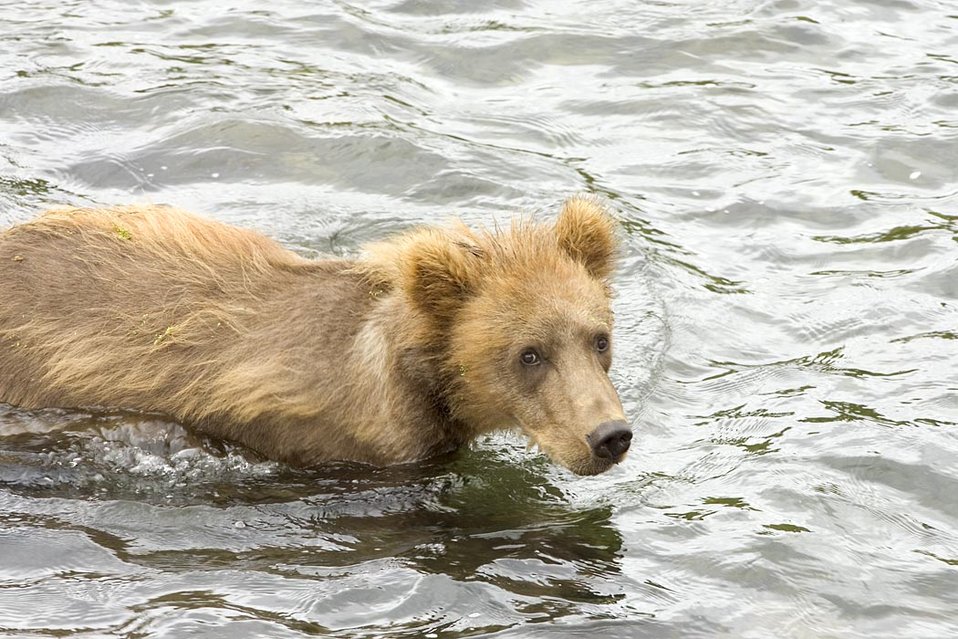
Brown bear cub in water

Grizzly bear cub standing in the water and looking at camera.